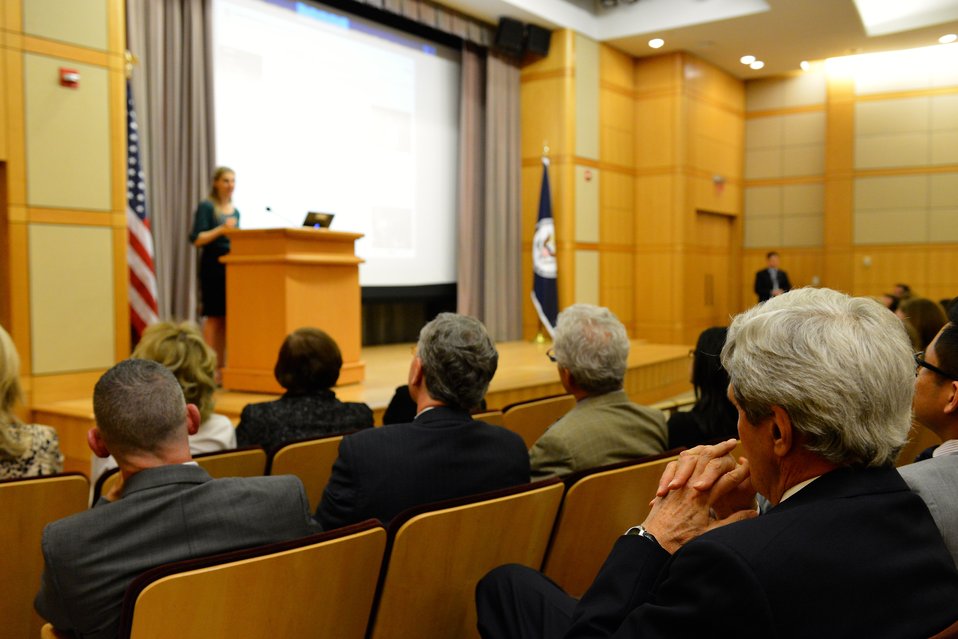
Secretary Kerry Watches His Daughter, Dr. Vanessa Kerry, Deliver Remarks on Health Diplomacy

With her father, U.S. Secretary of State John Kerry, looking on, Dr. Vanessa Kerry, Co-Founder and Chief Executive Officer of Seed Global Health, speaks on 'Improving Developing Country Health Systems through the Spirit of Volunteerism,' part of the Secretary’s Office of Global Health Diplomacy (S/GHD) Speaker Series, at the U.S. Department of State in Washington, D.C., on April 22, 2014.